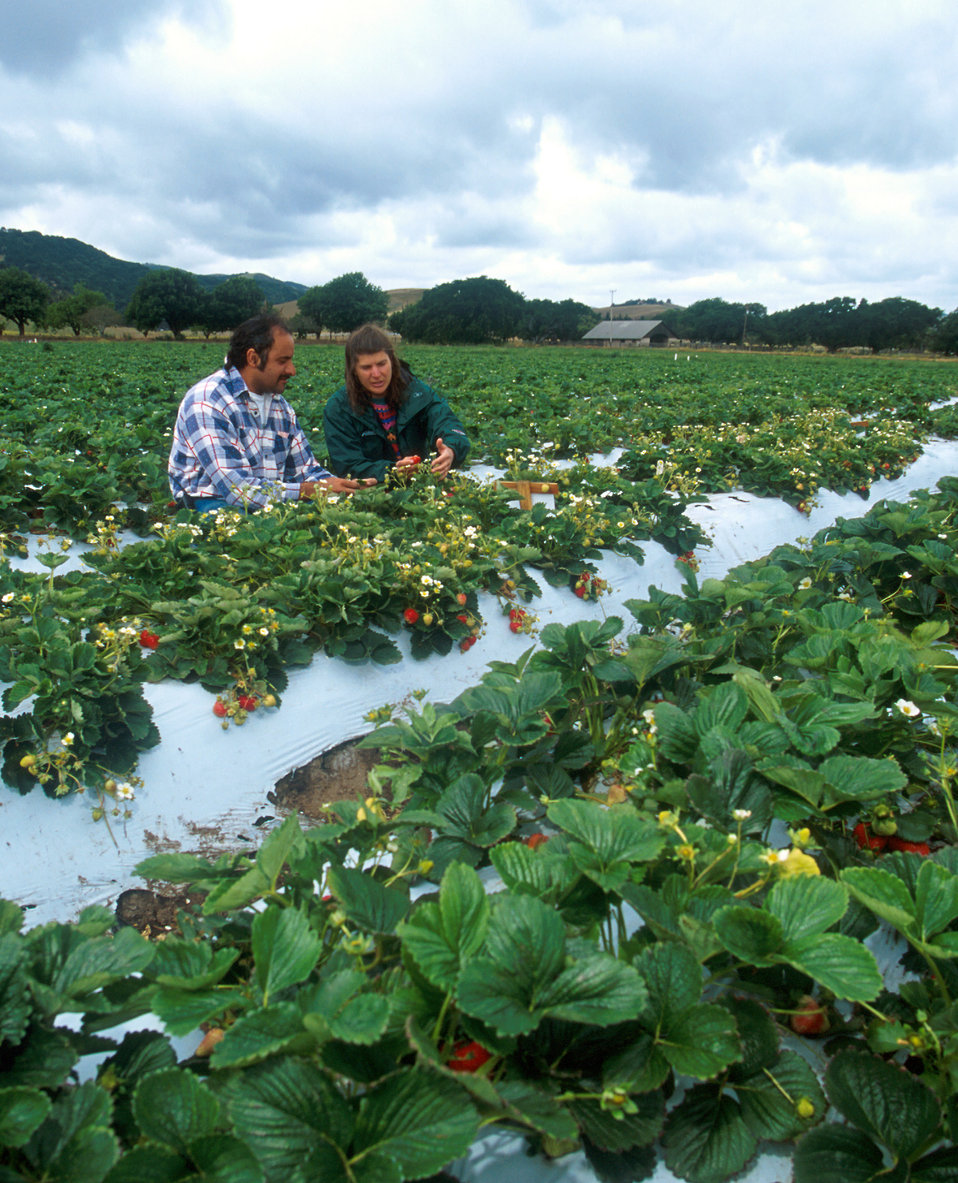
Farm manager Arthur Ayala and Carolee Bull discuss commercial variety trials being conducted at the farm of Dale and Christine Coke in San Juan Bautista, CA.